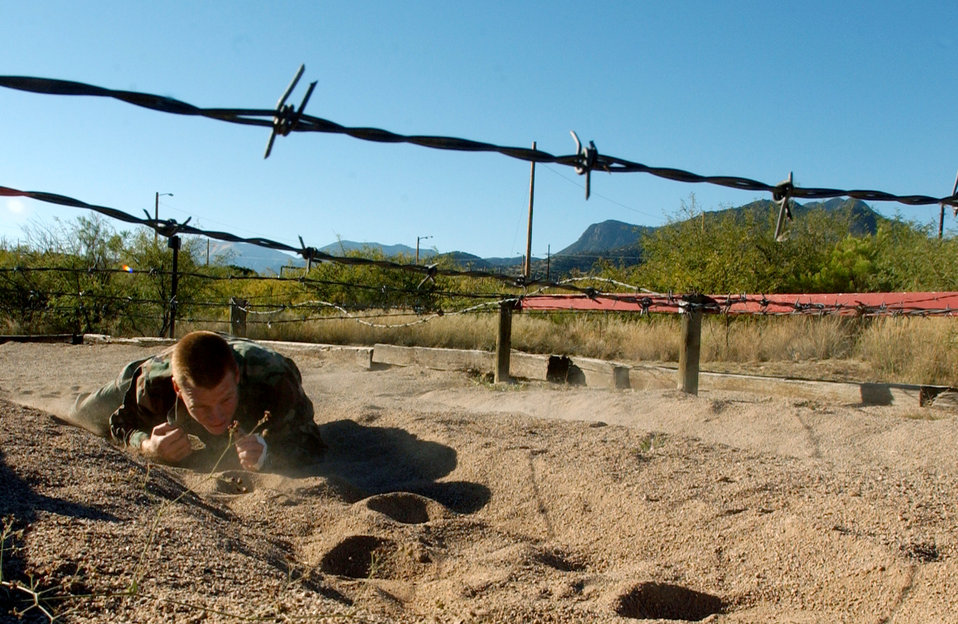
Low crawl

FORT HUACHUCA, Ariz. -- Airman First Class Jason Johnston low crawls under barbed wire on a training obstacle Oct. 14. Members of the U.S. Air Forces in Europe Defender Challenge team are spending three weeks here in preparation for the 2004 Defender Challenge competition. Defender Challenge held at Lackland Air Force Base, Texas, is an annual security forces competition. Airman Johnston is assigned to the 48th Security Forces Squadron, Lakenheath Air Base, England.